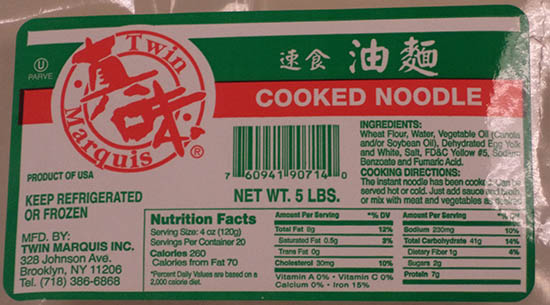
RECALLED – Cooked Noodle and Lo Mein Noodle

March 03, 2014 – Product Recall – Twin Marquis, Inc Issues Allergy Alert on Undeclared Milk in Specific Lots of its Cooked Noodle and Lo Mein Noodle.